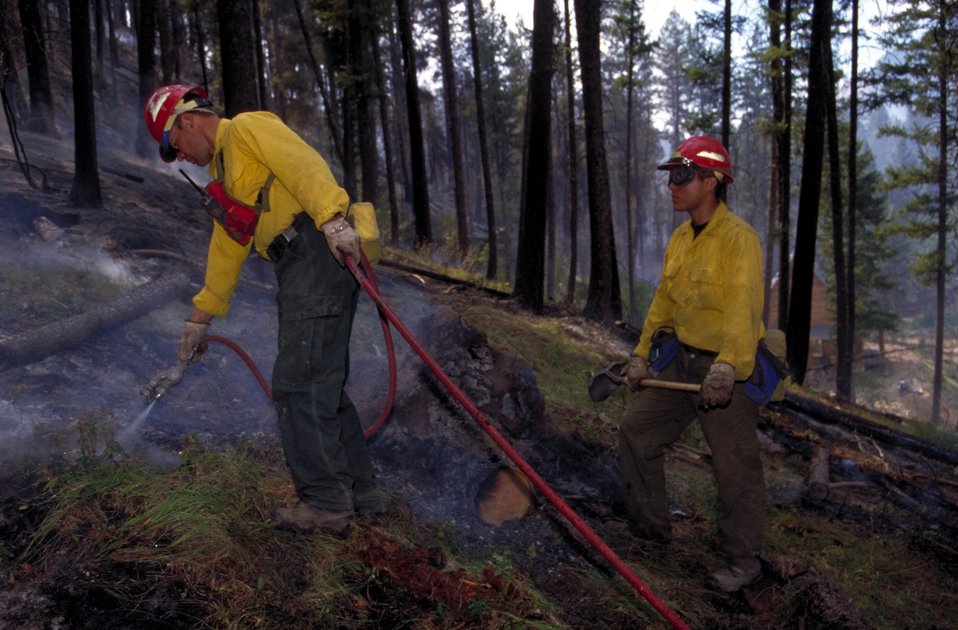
Wildland fire fighters Fire Season 2000 Lower Snake River District LSRD